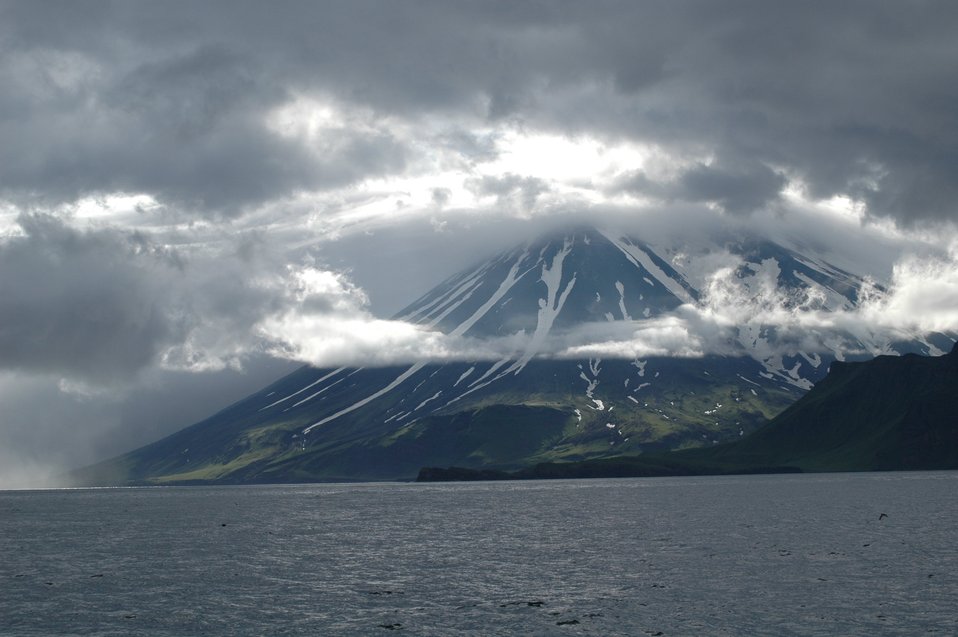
Korovin Volcano